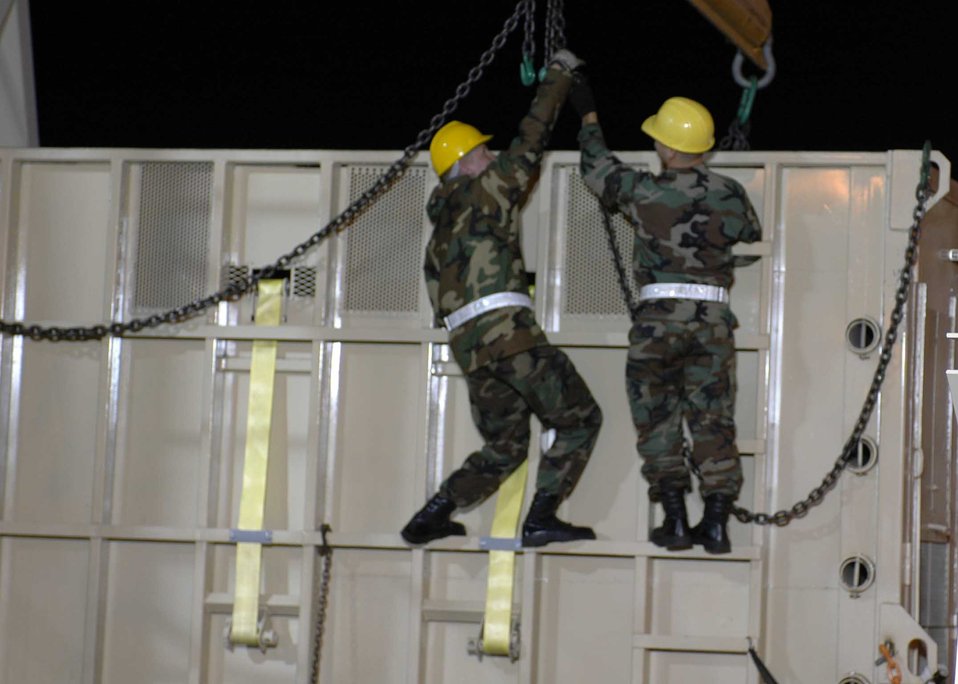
Operation Maggie Migration: mission of mammoth proportions

Airmen from the 60th Aerial Port Squadron work to load a crate holding Maggie the elephant's crate on to the truck that will take her to her new home near San Andreas Calif. Maggie was transported from the Alaska Zoo via a C-17 Globemaster III out of Elmendorf Air Force Base, Alaska, to live in a warmer climate.